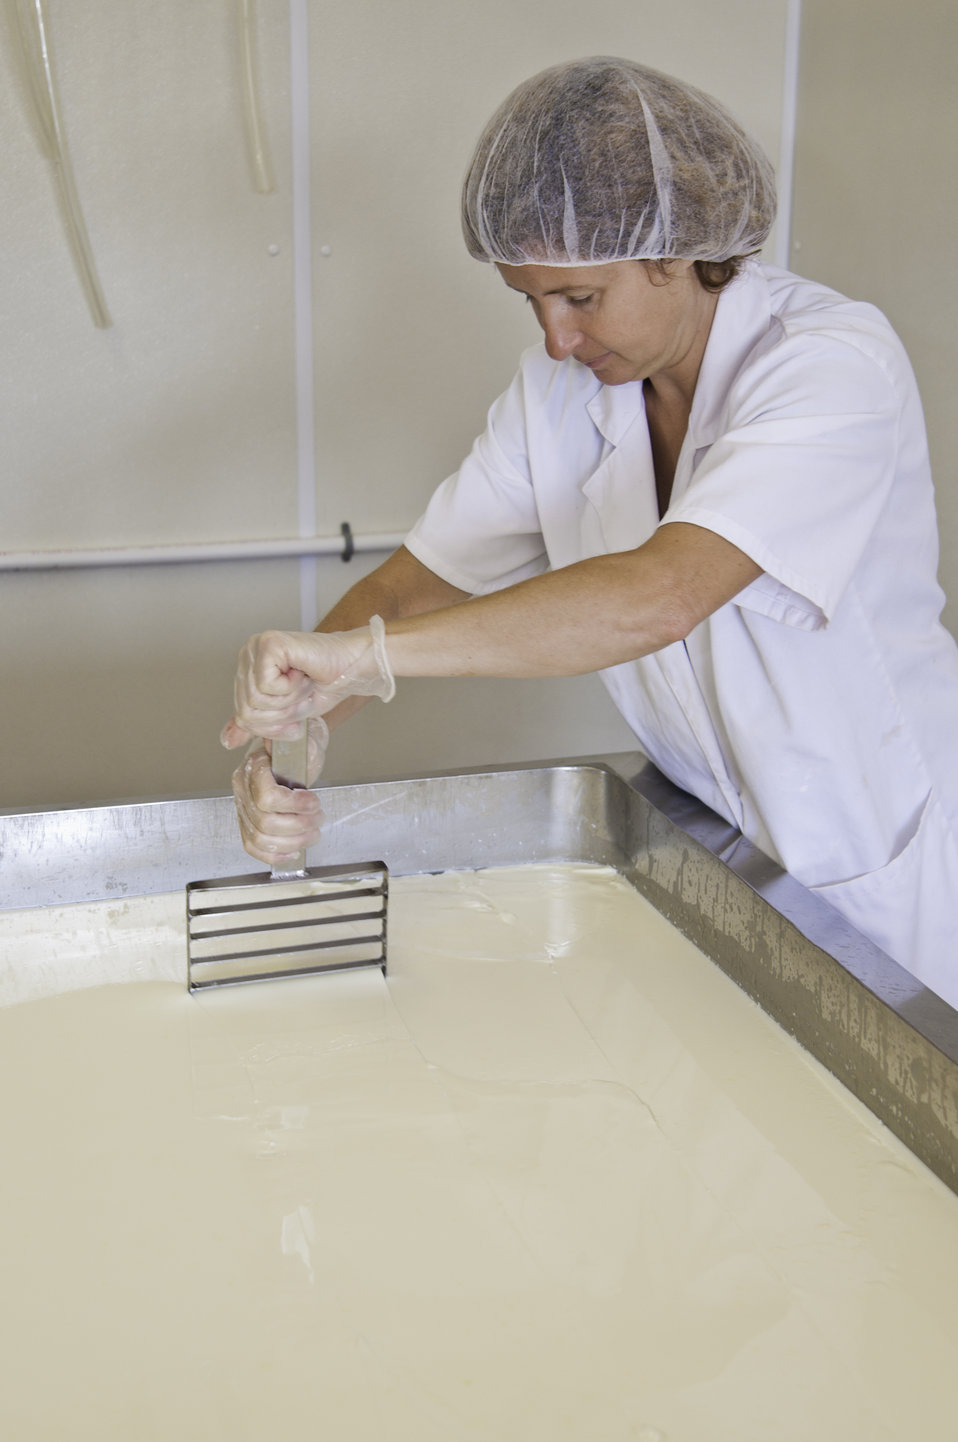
Chapel’s Country Creamery owner Holly Foster in Easton, MD cuts the milk curd with a curd knife in small cubes. Timing is everything in this step. Then the curds are cooked and stirred in the whey that was expelled in the cutting process. The dairy uses fresh raw milk 12-24 hours old. The milk is all-natural and contains no synthetic hormones, antibiotics, or chemical compounds. The 1150 pounds of milk in the vat will be used to make the dairy’s “Bay Blue” Cheese.